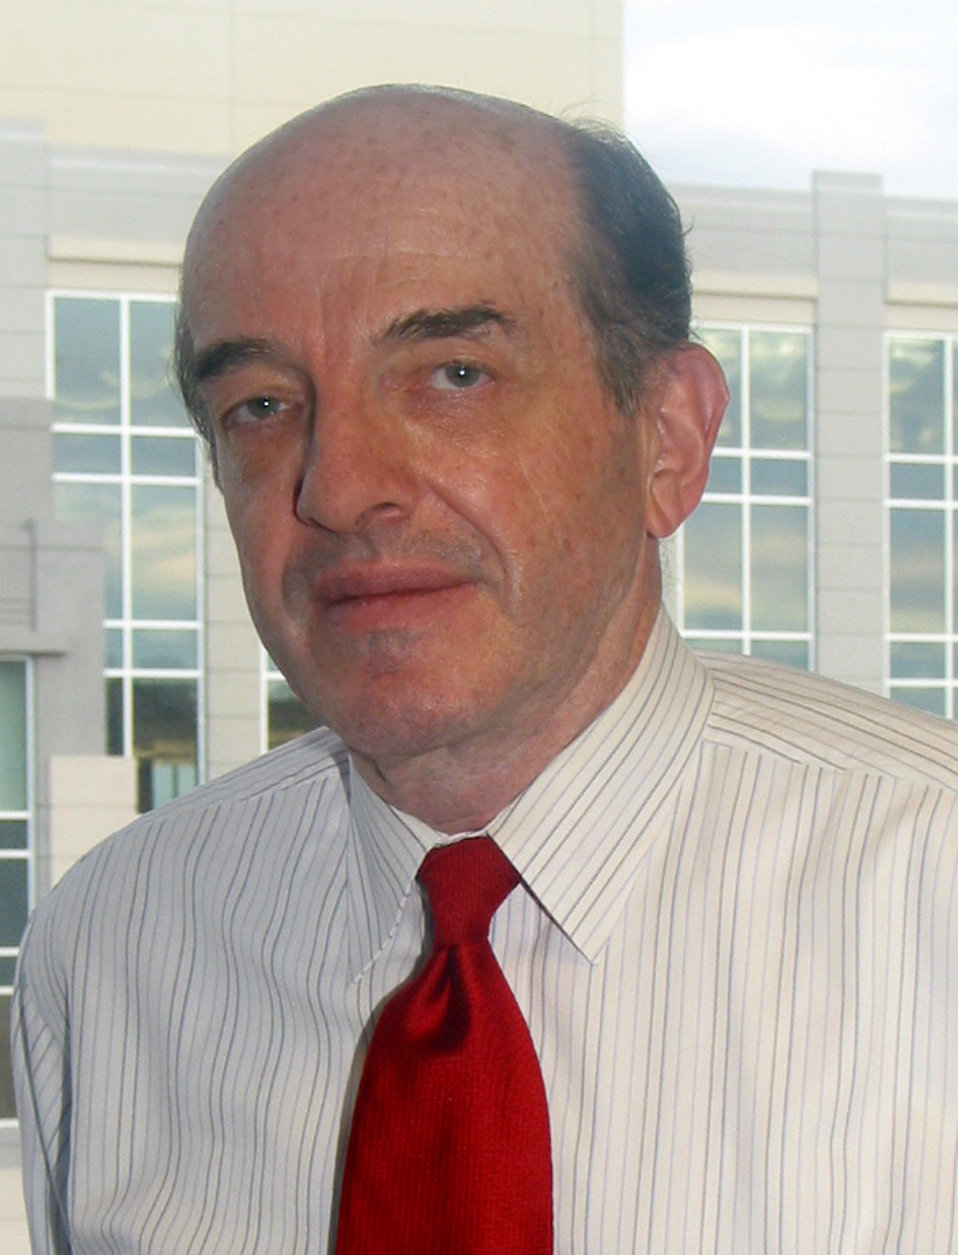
ppmjc-2